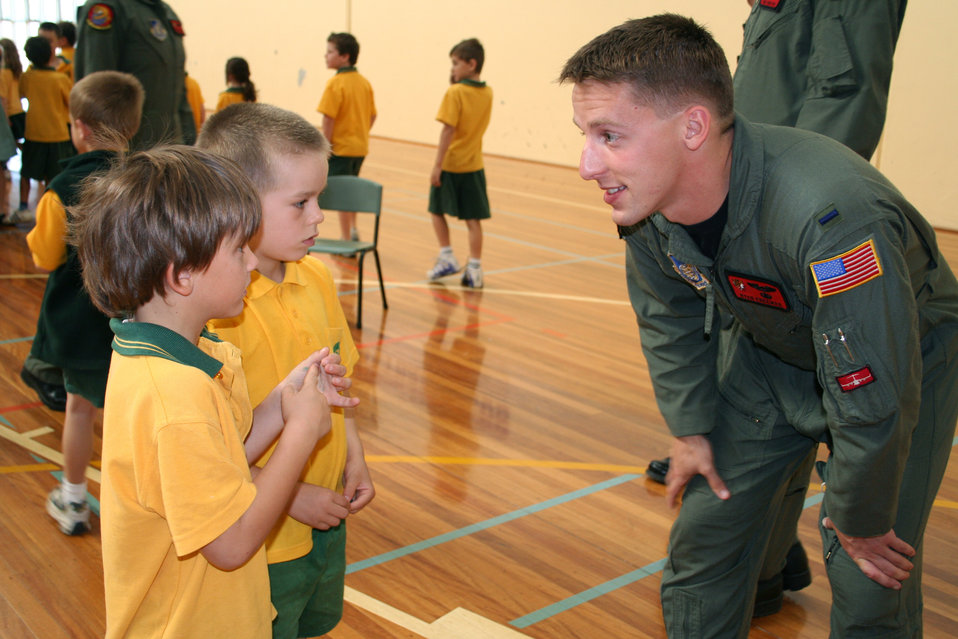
Airmen visit Australian primary school

First Lt. Ryan Freeman answers questions about being an Air Force pilot March 22 at the Lara Primary School in Victoria, Australia. Pacific Air Forces Airmen are in Australia supporting the Australian International Airshow 2007. Lieutenant Freeman a pilot with the 535th Airlift Squadron at Hickam Air Force Base, Hawaii.